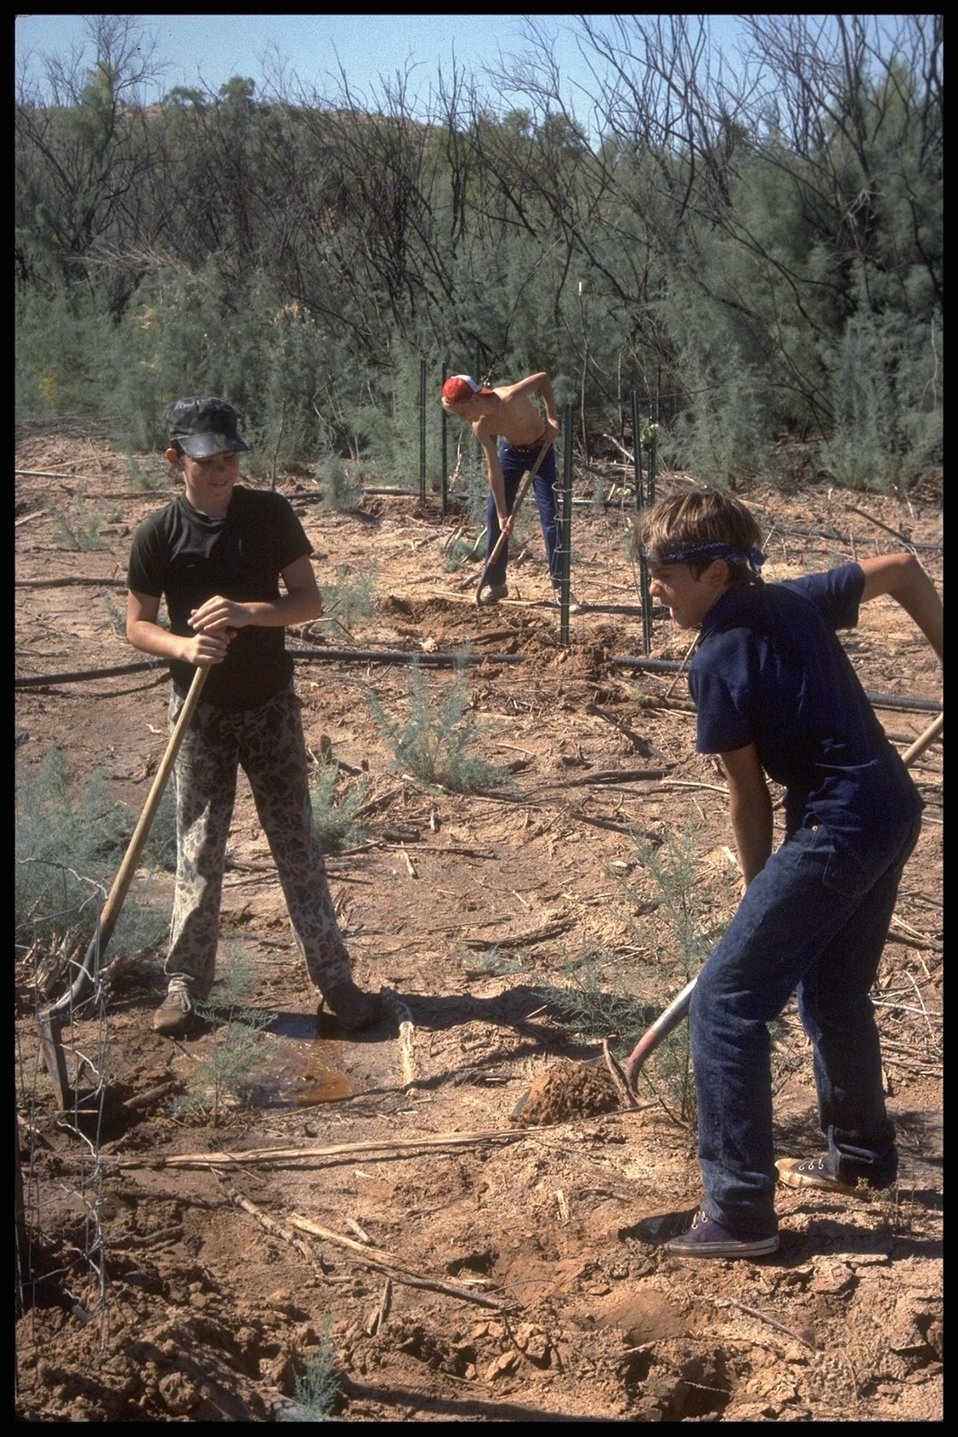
Youth get involved in volunteering to help clean up public lands.